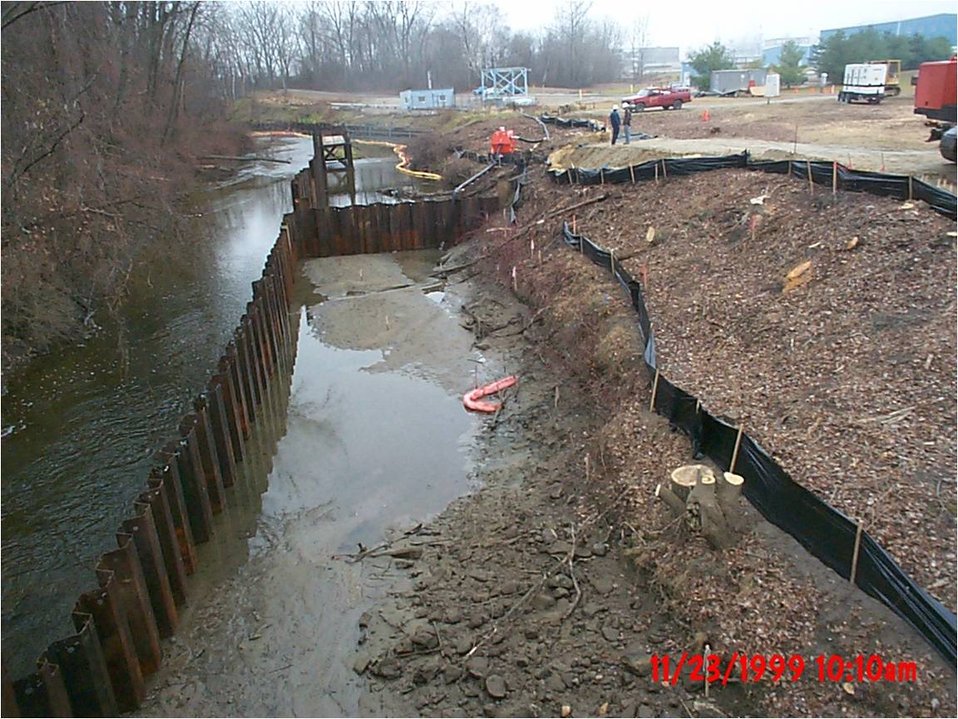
(Earlier photo) November 1999, 'Half mile' view from Newell Street

This late '90s cleanup addressed high levels of contamination along the river banks and in the bottom sediment. The first step towards restoring the river to it's natural, healthy state.

See subsequent photos for the 'after' views with restoration and re-growth.